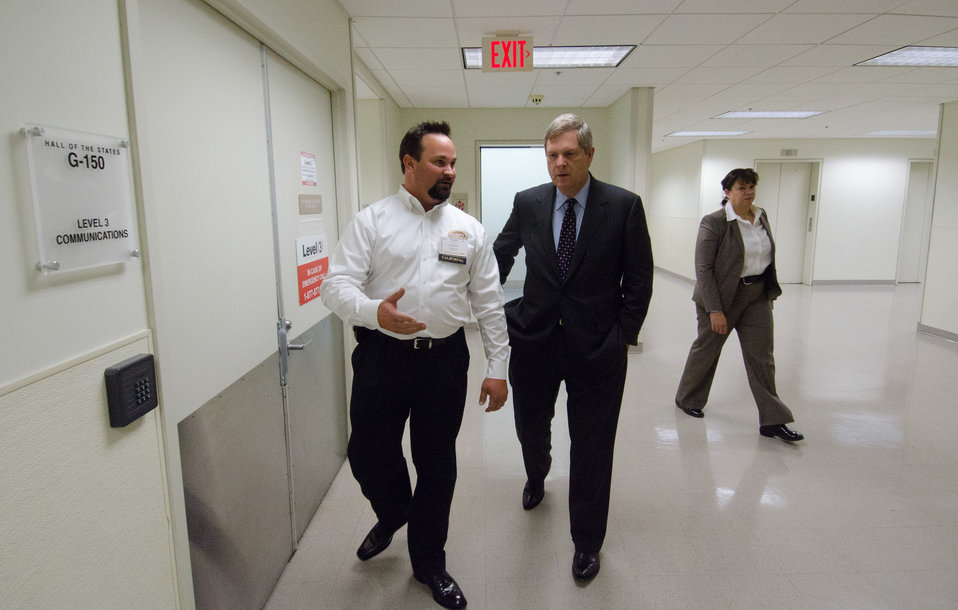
Kerman, CA farmer Steve Koretoff (white shirt) was able to compelled to meet U.S. Department of Agriculture Secretary Tom Vilsack (center) after the Secretary told of how when he was an Iowa lawyer, in the 1980's a farmer came to see him because the farmer was going to loose his farm after expanding operations so his youngest, seventh, and only son who wanted to be a farmer could do so, but when the farm got financially overextended the son took his own life because he felt responsible. This experience is one of Secretary Vilsack's many motivators, and struck a cord for Mr. Koretoff during the Organic Trade Association’s 2011 Policy Conference, on Wednesday, April 6, 2011 in Washington, DC. They exchanged contact information to stay in communication with each other.